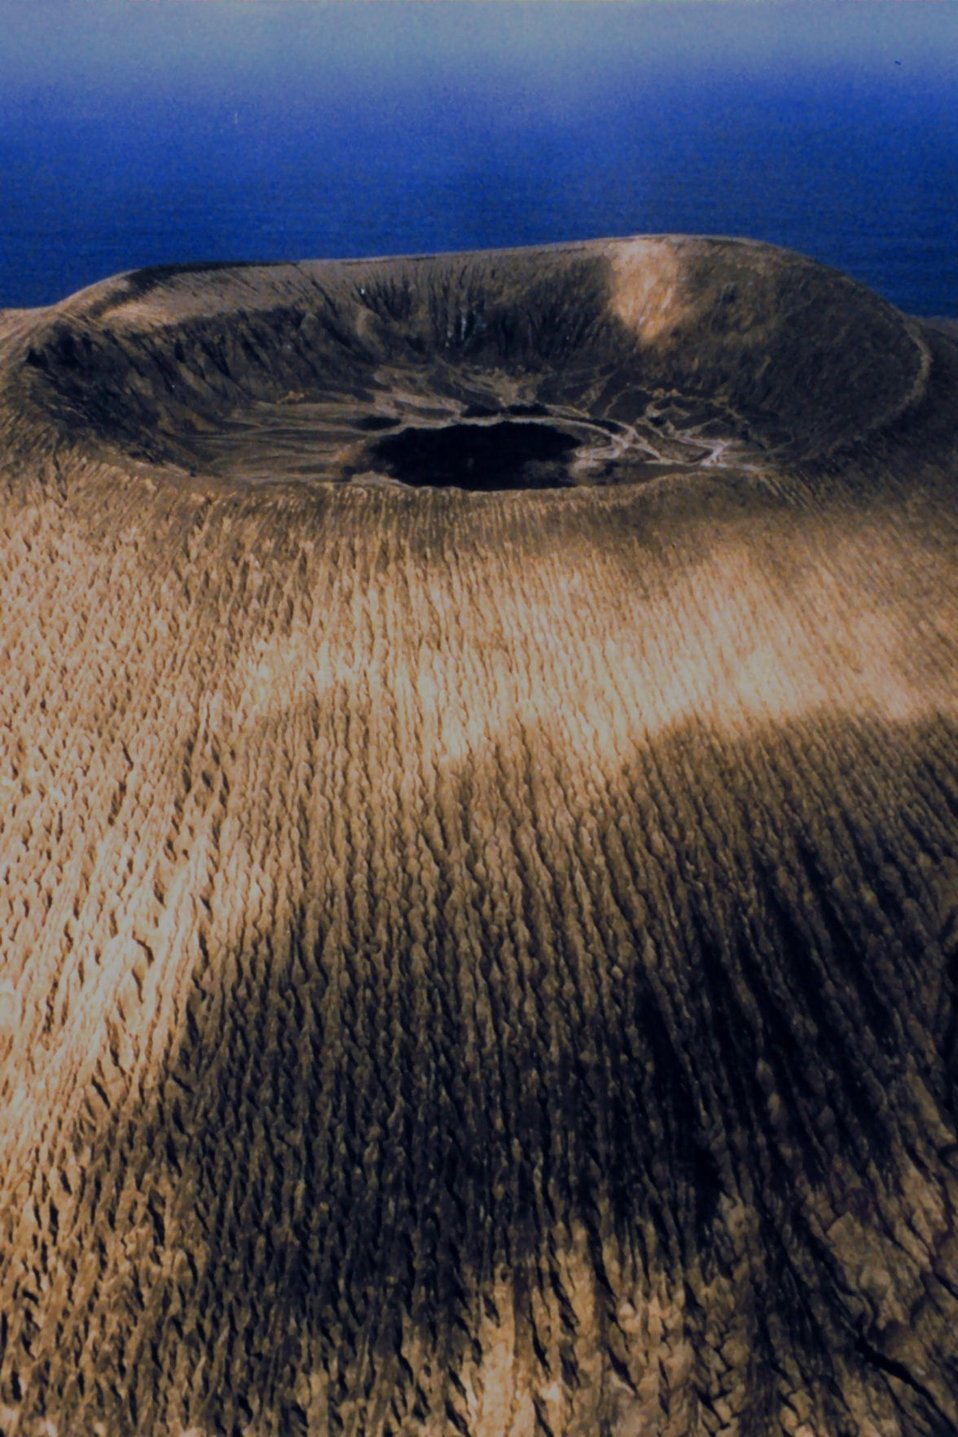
The volcano crater at San Benedicto Island.